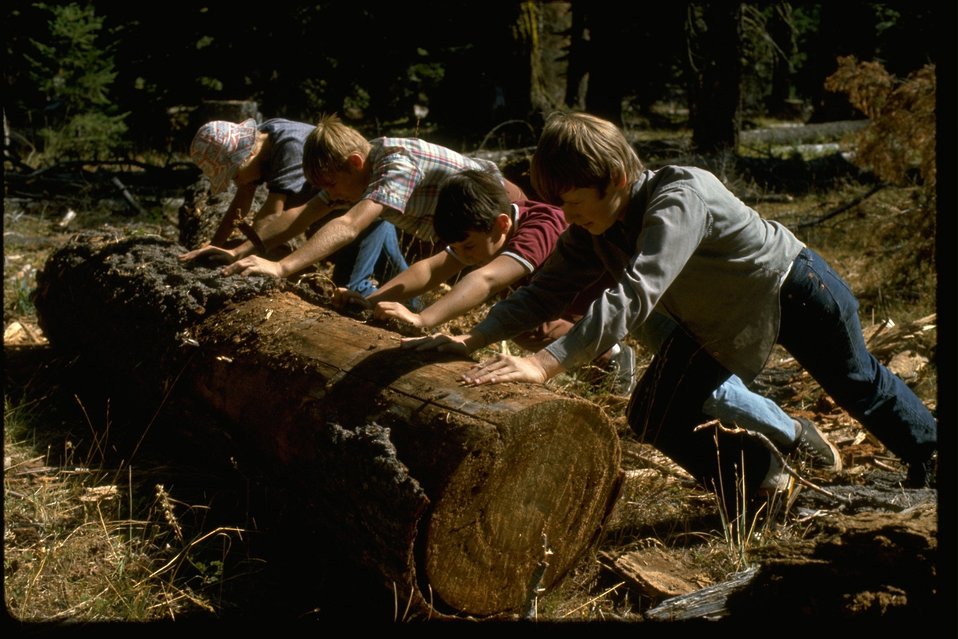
Trail volunteers on the Pacific Crest are pushing a log out of the way.